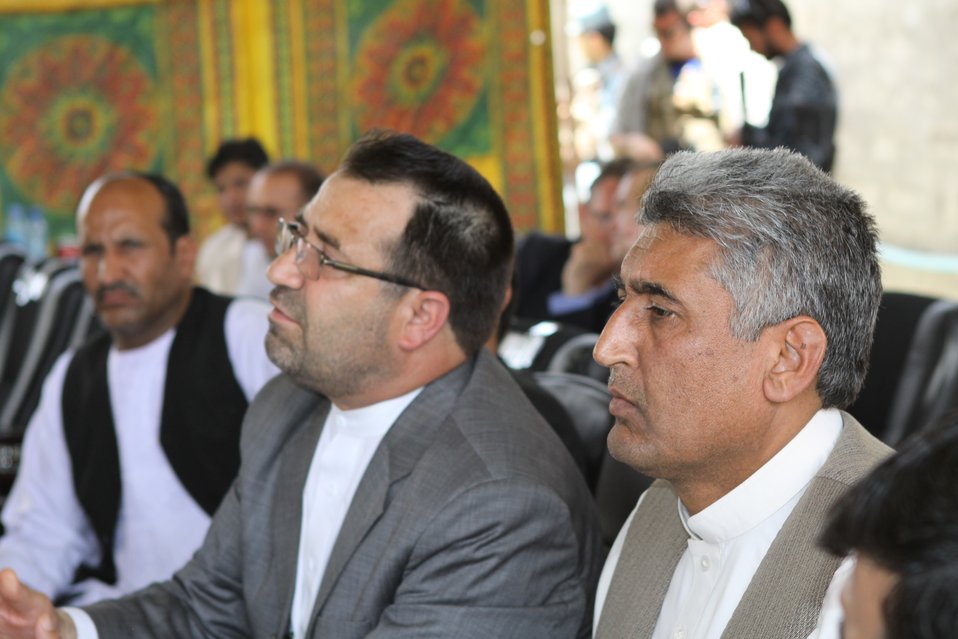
Bolan Poultry Farm